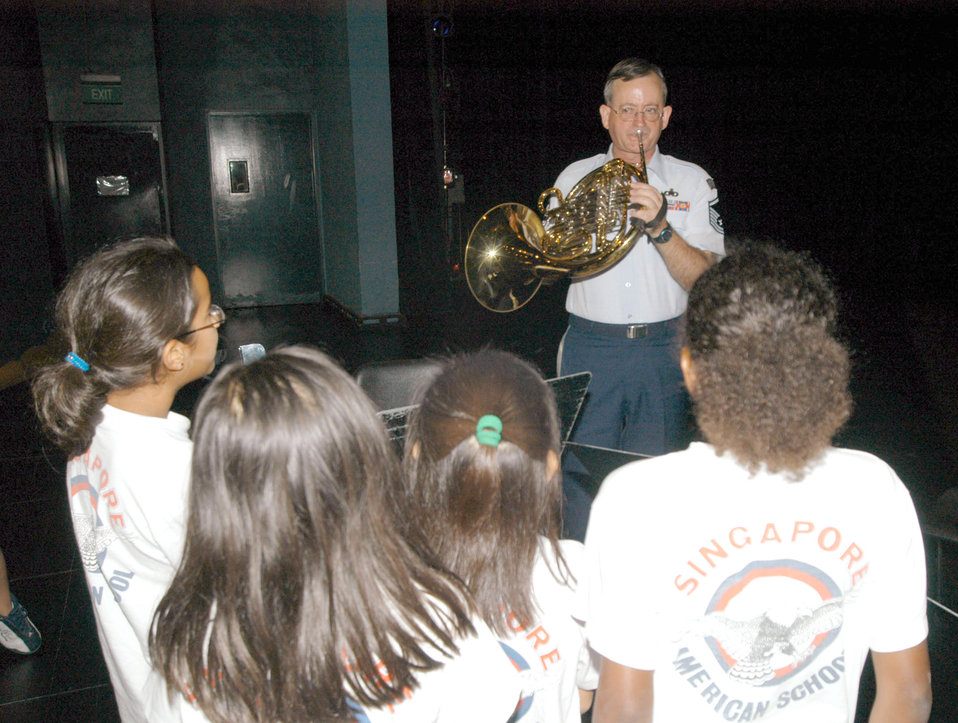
Tooting his horn

SINGAPORE -- Master Sgt. Jim Jones plays the French horn to Singapore American School students Feb. 24. Members of Pacific Air Forces band, Pacific Brass, are here as an official participant in Asian Aerospace 2004. The musicians took time out to perform two concerts for more than a third of the school's student body of 3,000 and to speak with aspiring musicians.